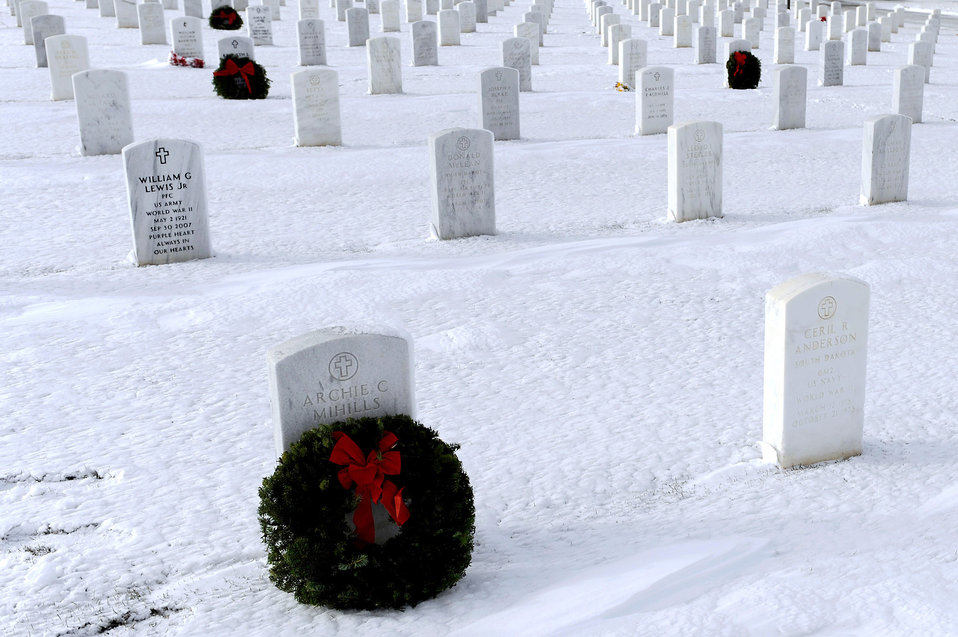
Sacrifice #384

Approximately 250 wreaths honor the graves of veterans Dec. 11, 2010, at the Black Hills National Cemetery, S.D. More than 50 Airmen from Ellsworth Air Force Base, S.D., volunteered to lay wreaths on the graves during the 2010 Wreaths Across America ceremony, held annually on the second Saturday of December, in honor of veterans who have passed.